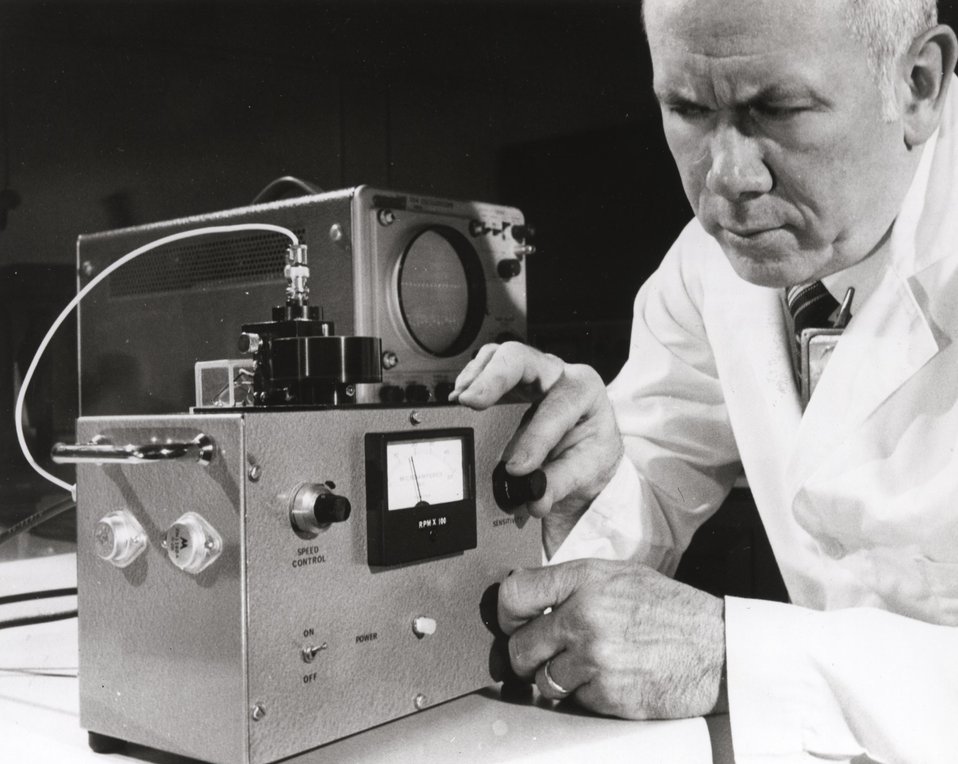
High-speed clinical analysis of body fluids is now possible using a centrifugal system called the GeMSAEC developed at the AEC's oak Ridge National Laboratory (ORNL), Oak Ridge, Tenn. c. 1972